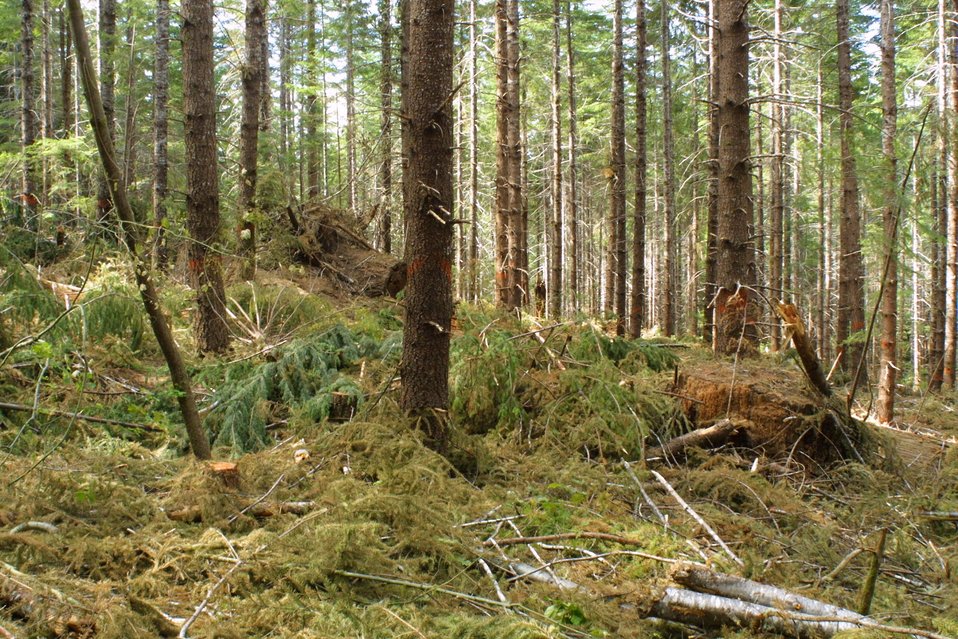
Camas East Timber Sale in Late Successional Reserve.